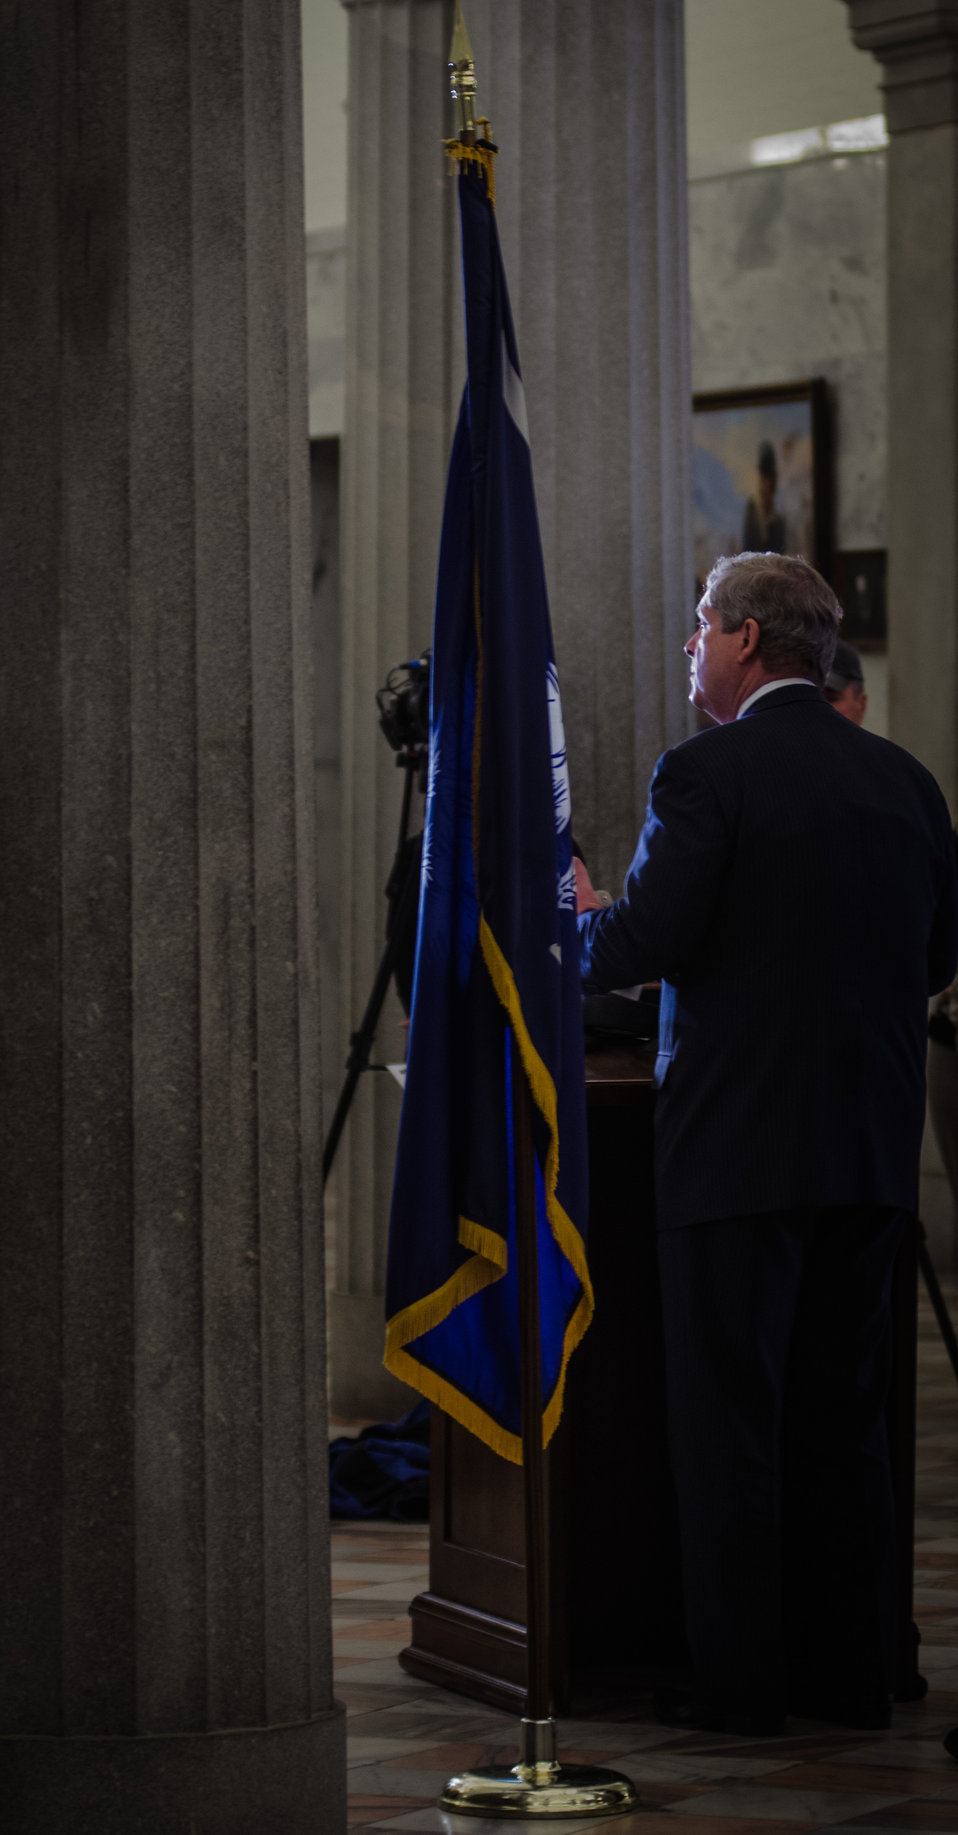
Agriculture Secretary Tom Vilsack (podium) speaks at a press conference in the South Caroline State Capitol in Columbia, SC after the kick off of the Strike Force Initiative For Rural Growth and Opportunity at Voorhees College in Denmark, SC, on Tuesday, Mar. 26, 2013.